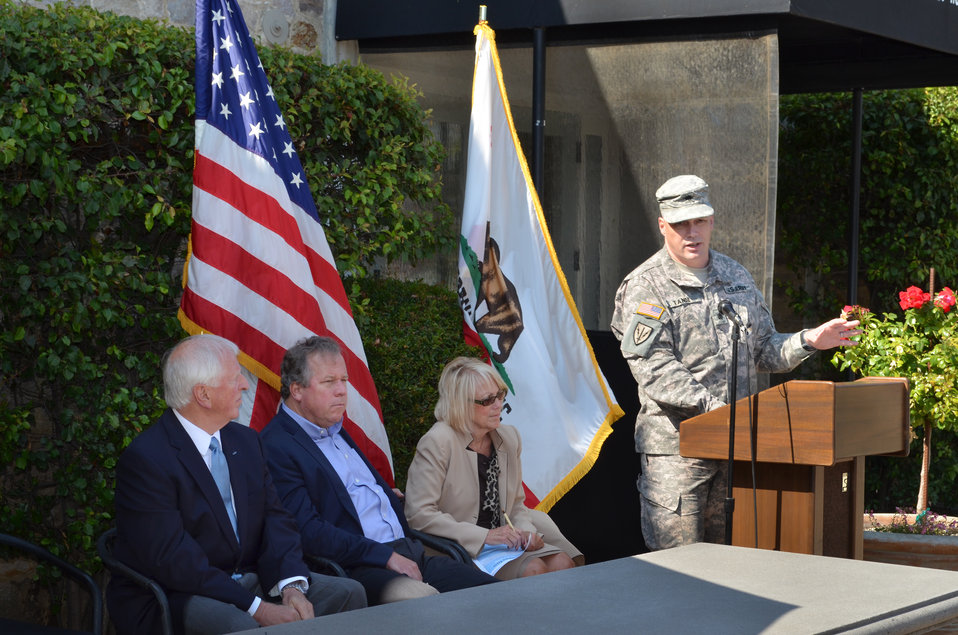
Lt. Col. Chris Tande addresses attendees during ceremony in Napa

Lieutenant Col. Chris Tande (right), deputy chief of contracting with the U.S. Army Corps of Engineers Sacramento District, addresses more than 50 attendees during a celebratory ceremony in Napa, Calif., July 29, 2013. The event highlighted the Corps' $16.6 million appropriation to construct the Napa Creek project's dry bypass.

'I speak for everyone at the Corps involved when I say how thrilled we are to be able to construct the Oxbow Bypass,' said Tande. Joining Tande were (from left) Rep. Mike Thompson, Napa County Supervisor Bill Dodd and Napa Mayor Jill Techel.